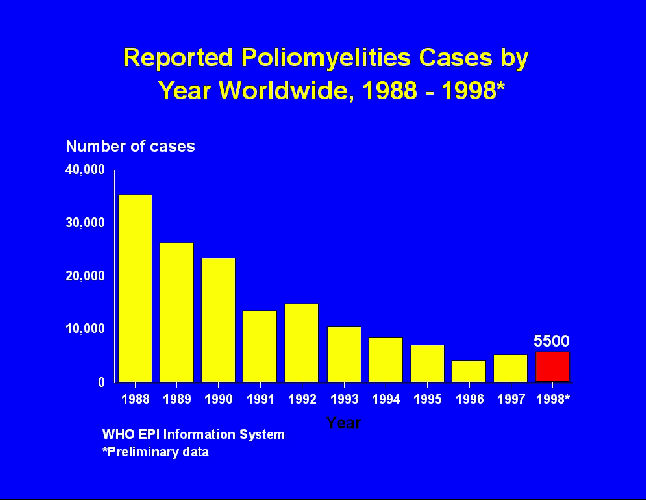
Worldwide polio cases by year, 1988-1998.